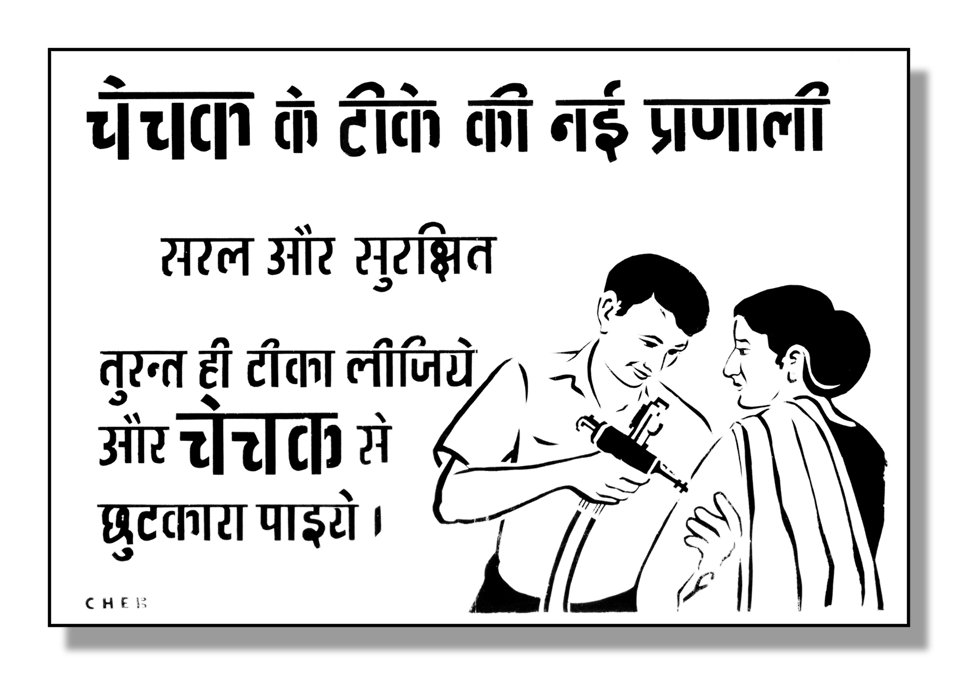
Early pre-1979 poster created to promote the importance of Smallpox and Measles vaccinations in foreign lands.